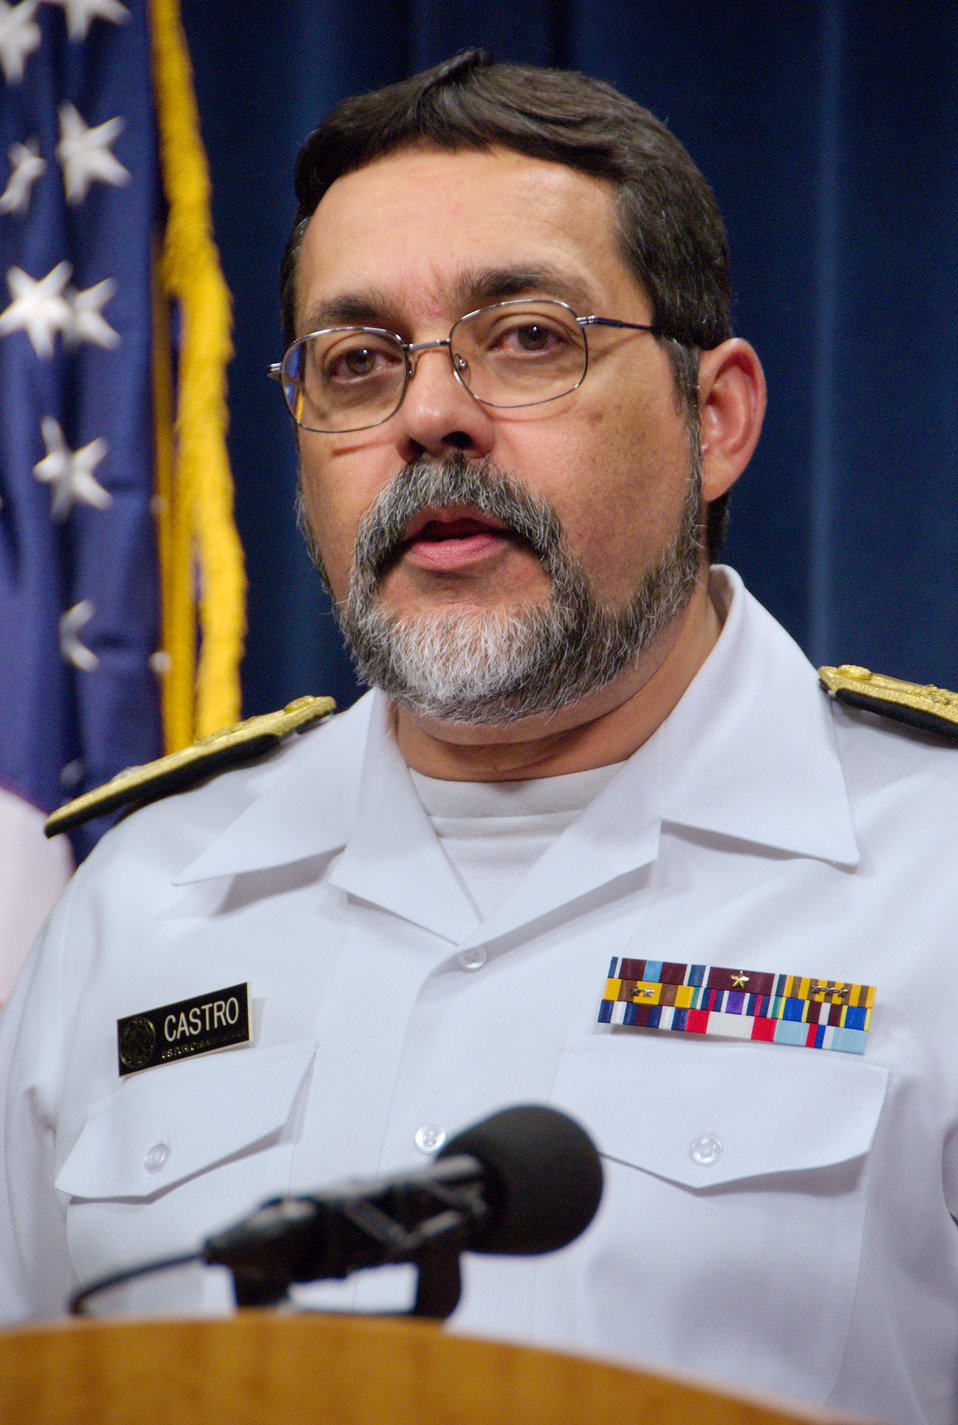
This 2007 image depicted Centers for Disease Control's, Director of the Division of Tuberculosis Elimination, Dr. Kenneth Castro, presenting information at a press briefing regarding the organization's public health investigation into who may have been exposed to an extensively drug-resistant tuberculosis (XDR-TB) infected person. The information release included the action and steps that the CDC was taking in response to a case of XDR-TB in a United States citizen who'd undertaken international travel. XDR-TB is a recently defined subtype of a multi-drug resistant TB, which can cause severe illness and death.